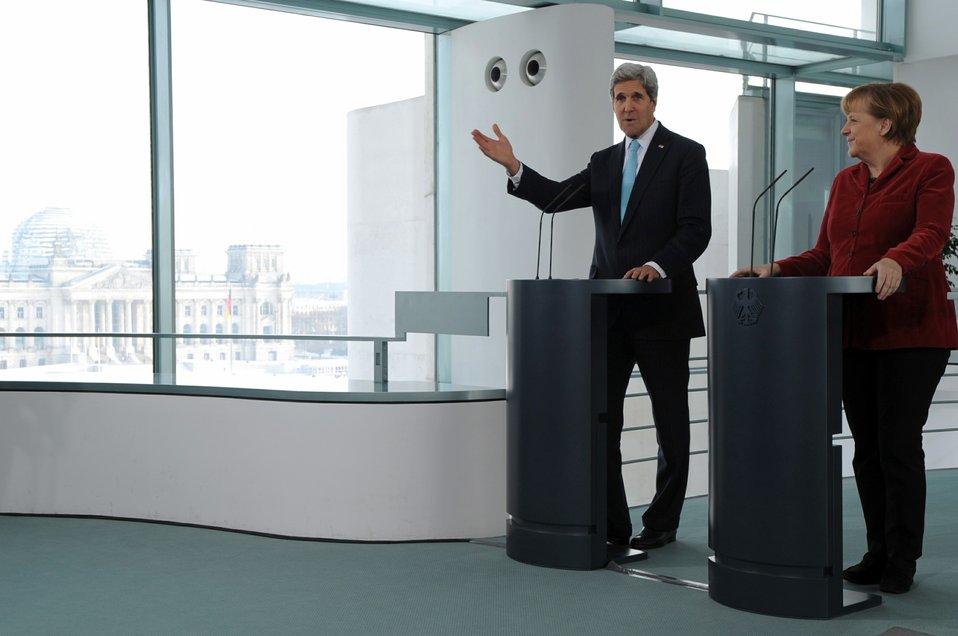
Secretary Kerry, Chancellor Merkel Address Reporters in Shadow of Reichstag

U.S. Secretary of State John Kerry and German Chancellor Angela Merkel deliver statements to reporters against a backdrop of the Reichstag Building in Berlin, Germany, on January 31, 2014.